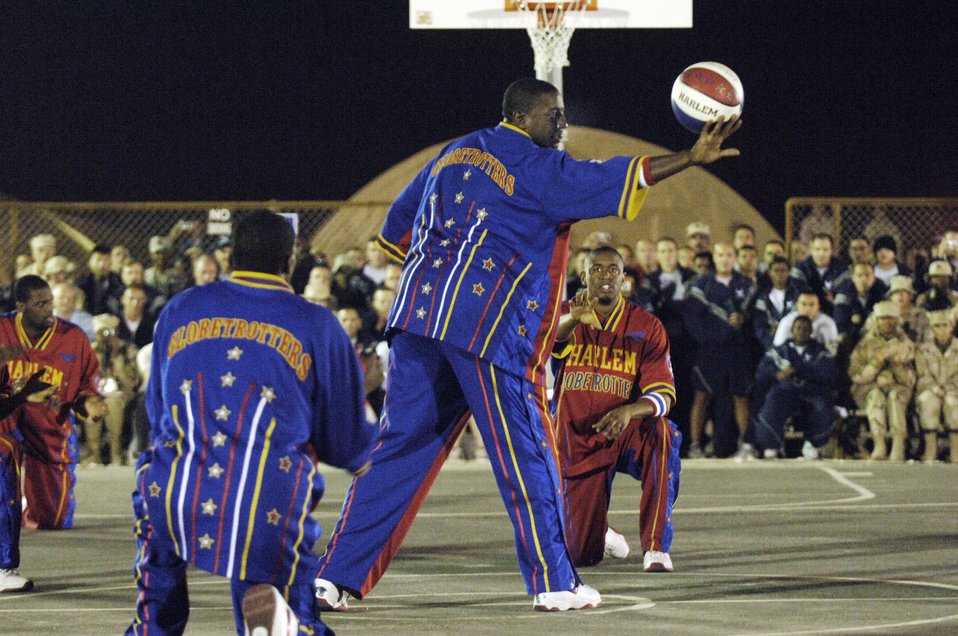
Showtime

Paul